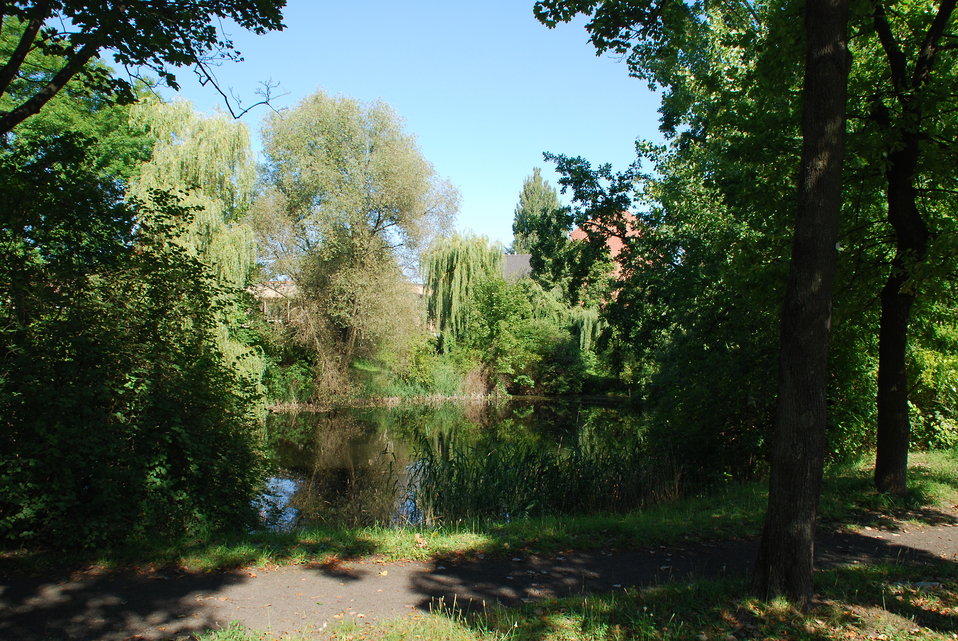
Theaterteich in Frankfurt (Oder), am ehemaligen Kleist-Theater, Friedrich-Ebert-Straße